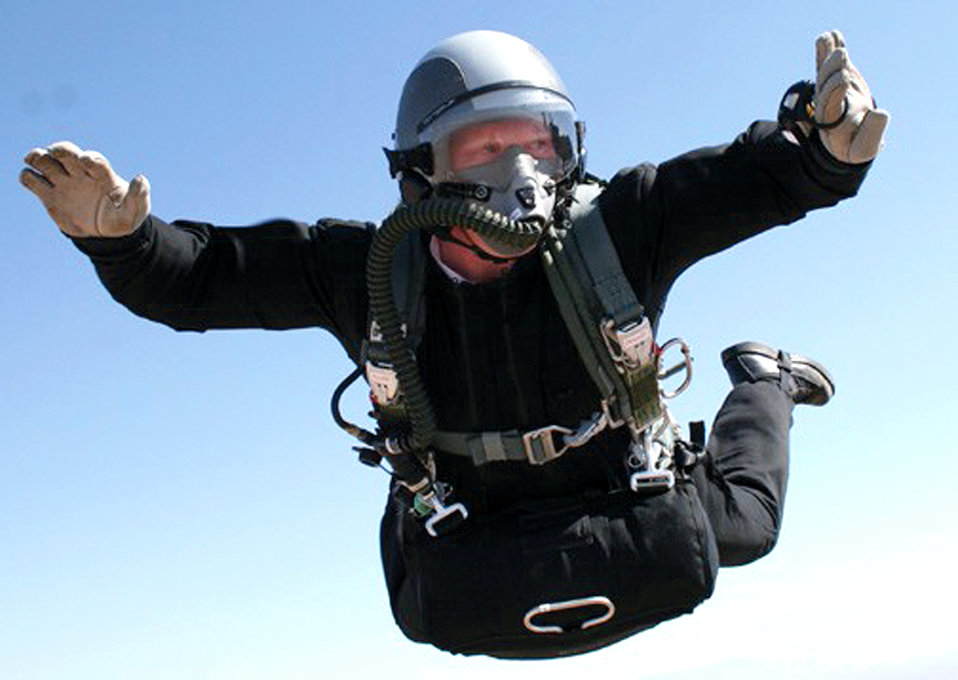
Test parachutists jump to conclusions

Staff Sgt. Scott Lawrence freefalls over Edwards Air Force Base, Calif., on Tuesday, May 23, 2006 before deploying his parachute. He is assigned to the 418th Flight Test Squadron's test parachutist program.